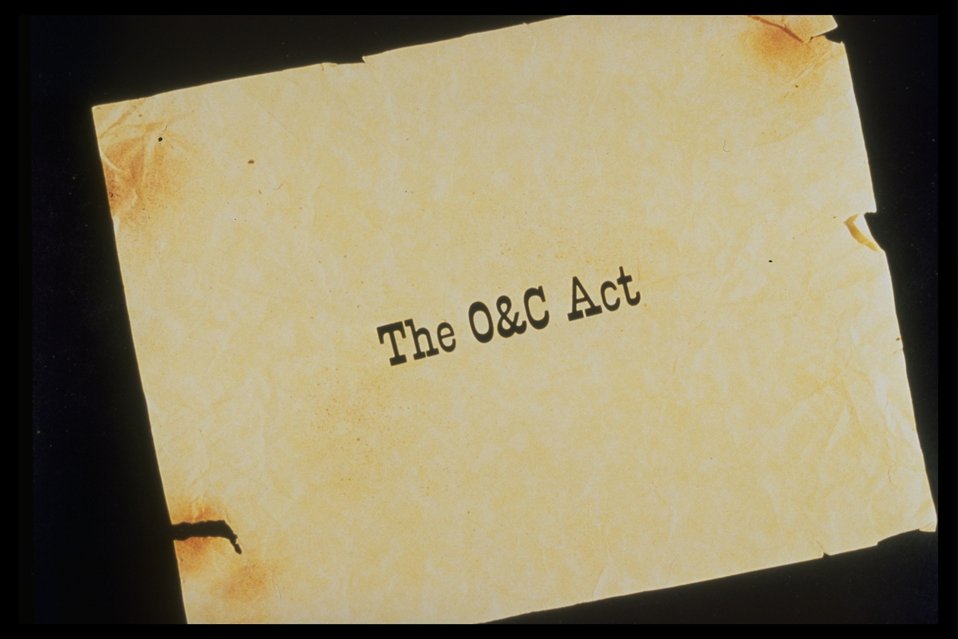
Historical O & C slide title page.